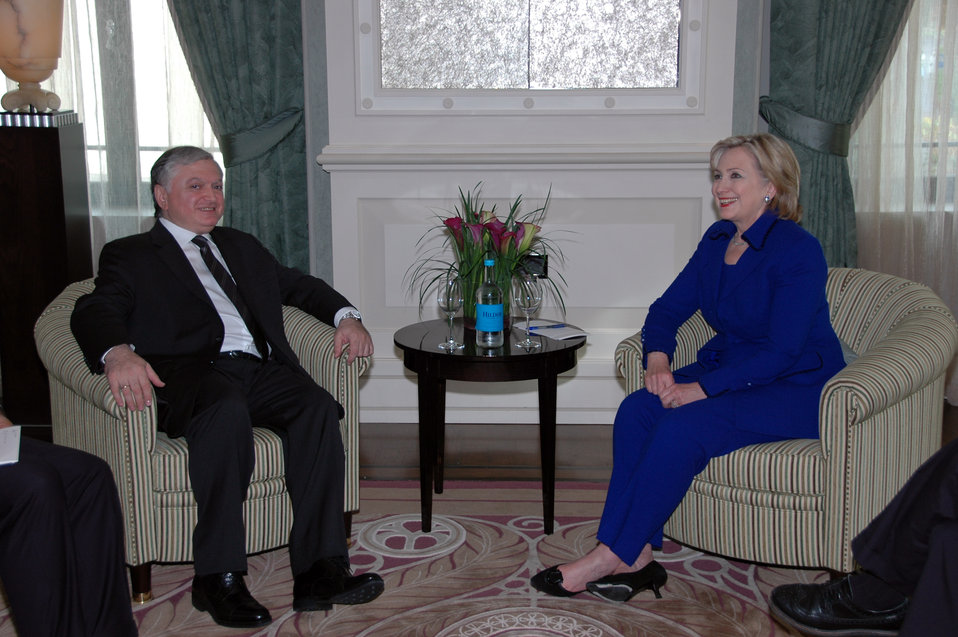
Secretary Clinton Meets With Armenian Foreign Minister

U.S. Secretary of State Hillary Rodham Clinton with Armenian Foreign Minister Edouard Nalbandian in Zurich, Switzerland October 9, 2009.